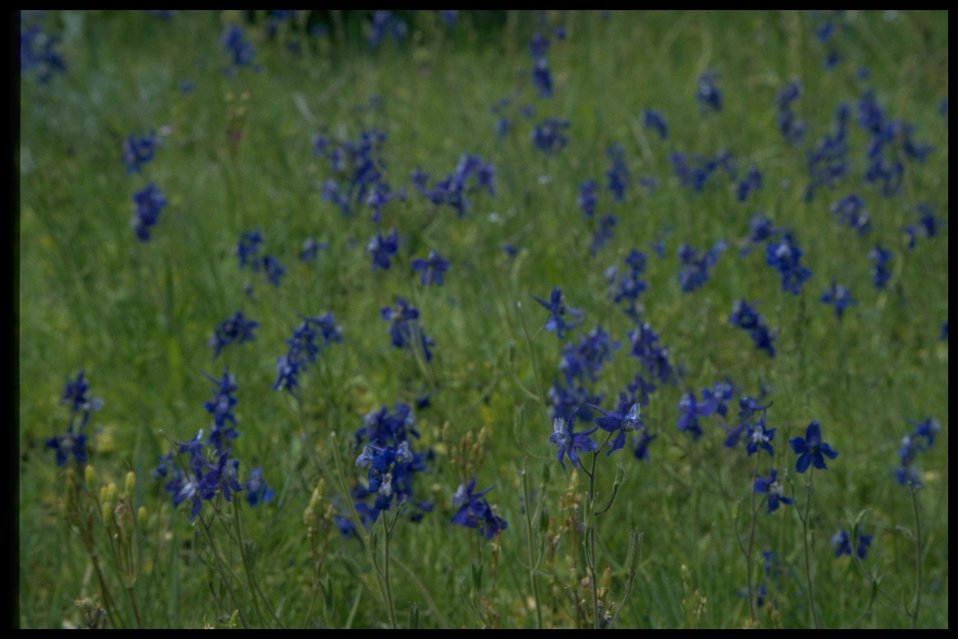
Closeup shot of Larkspur wildflowers.